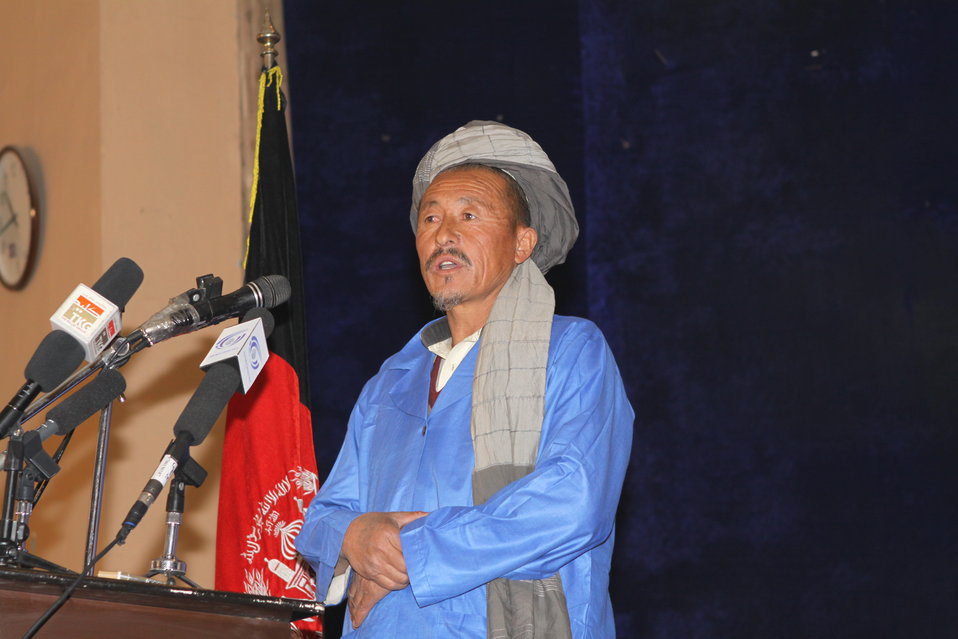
Community Health Workers Celebrated

Kabul, Afghanistan | December 5, 2010 — In support of the United Nations designated International Volunteer Day for Economic and Social Development, Afghanistan’s Ministry of Public Health celebrated its annual Community Health Worker Day today. Acting Minister of Public Health Dr. Suraya Dalil, USAID Senior Deputy Mission Director Robert Hellyer, other government officials, and international donors joined in recognizing the critical contribution of community health workers in Afghanistan and encouraging them to continue their voluntary support to their communities.
The event praised the contributions of the more than 22,000 volunteers throughout the country who deliver community level health-education, counseling, and services out of village health posts located in private homes. The Ministry of Public Health envisioned that community-based healthcare programs will actively encourage communities and families to adopt healthy lifestyles and behaviors, and provide families access to high quality and socially acceptable preventative medicine and life-saving services.
“We have 22,000 community health workers in Afghanistan that are able to implement the basic and standard medicines. They all have been trained through a job description,” said Minister Dalil. Addressing the health workers, she added, “I am proud and feel powerful that I have people like you.”
USAID-funded health projects collaborate closely with the Ministry of Public Health to improve the health and nutritional status of Afghans, provide quality primary healthcare, and promote healthy behaviors at the community and household-levels. USAID supported the training of more than 9,000 of the volunteer community health workers currently working in Afghanistan.
“On behalf of the American people, I congratulate the Community Health Workers for their diligence to gain the skills and knowledge necessary to serve their communities in this important role,” said USAID Senior Deputy Mission Director Hellyer. “USAID strongly supports community based health care and believes that quality community-based health services are essential to reaching Afghanistan’s Millennium Development Goals.”
To support the Basic Package of Health Services, USAID assisted in developing the community health worker training manual, helped train community health worker supervisors and master-trainers, facilitated in-service training, and produced and developed reporting tools, job aids, and education materials.